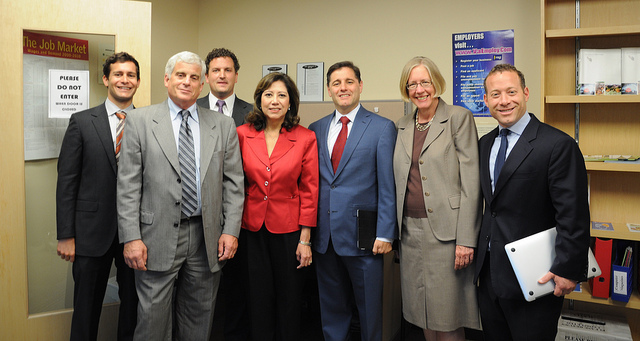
Connect to Compete 7.16.12

In Arlington, VA - FCC Chairman Julius Genachowski was joined by Secretary of Labor Hilda L. Solis to announce a partnership between the FCC and DOL to promote digital literacy for workers. Also on hand was Howard Feldstein, Arlington Center Director; Lee Davenport, from Connect2Compete; Susan Hildreth, Director, Institute of Museum and Library Services; and American Job Center client Frank O’Brien.